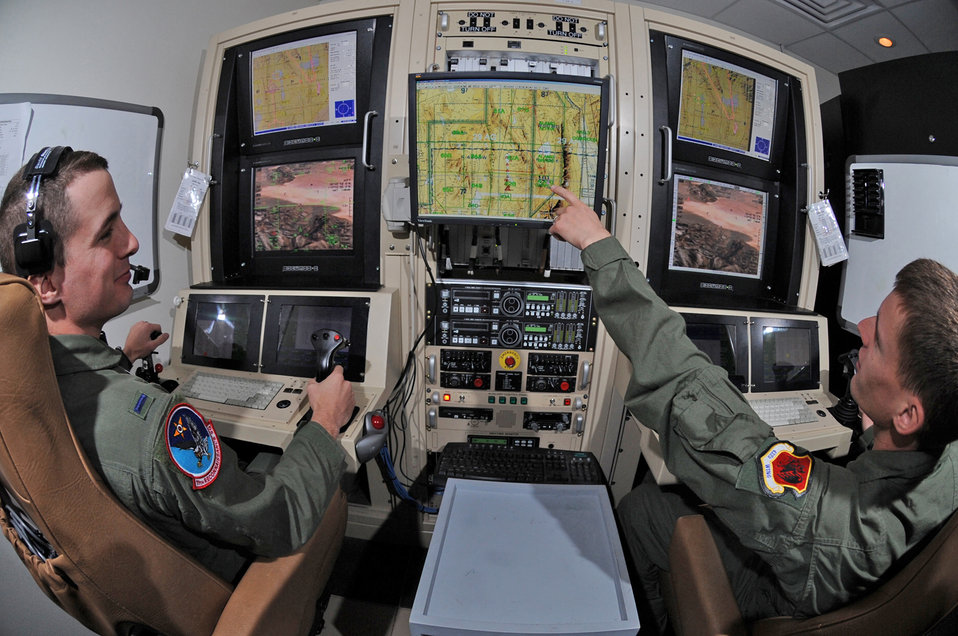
Unmanned aircraft crews strive to support warfighters

Airman 1st Class Caleb Force assists 1st Lt. Jorden Smith, a MQ-1B Predator pilot, in locating simulated targets during a training mission conducted inside the simulators at Creech Air Force Base, Nev. Airman Force is a MQ-1B Predator sensor operator. Both are assigned to the 11th Reconnaissance Squadron.